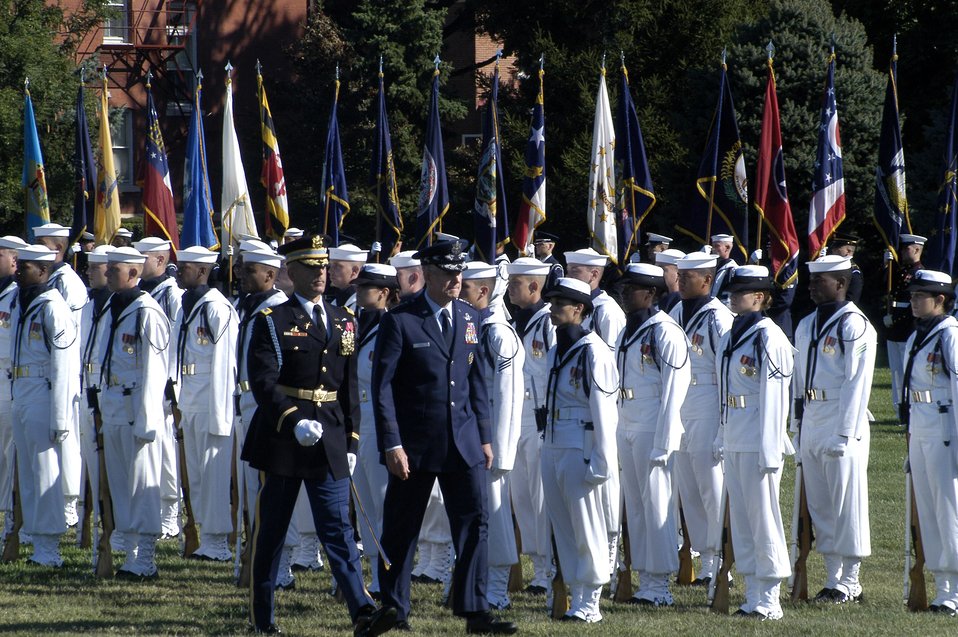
US Armed Forces Retirement and US Armed Forces Hail Ceremony

FORT MYER, Va. -- Gen. Richard B. Myers inspects the troops at the Armed Forces Farewell Tribute to him here Sept 30. General Myers retired after 40 years of service as the 15th chairman of the Joint Chiefs of Staff.